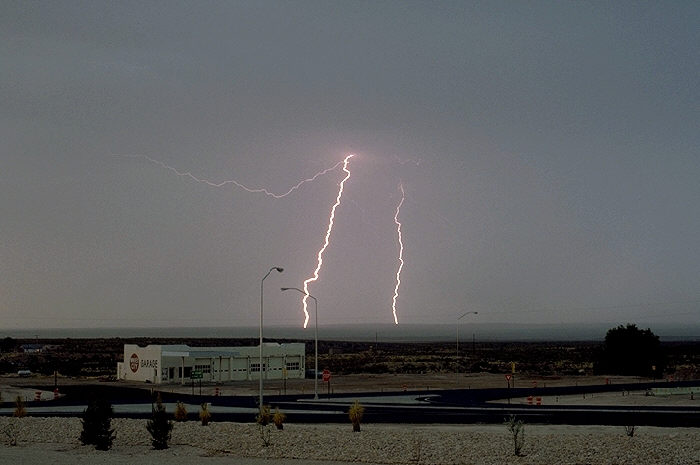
Lightning in approaching storm, White's City, New Mexico.